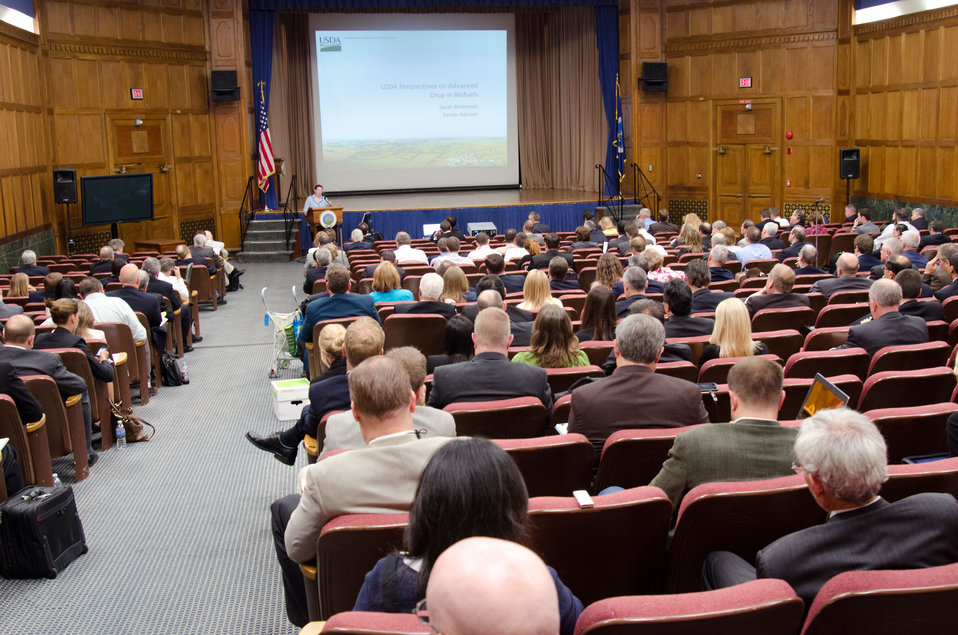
Senior Advisor to the Secretary of Agriculture Sarah Bittleman talked about the Agriculture perspectives on advanced drop-in biofuels, at the Industry Roundtable held in the Jefferson Auditorium, U.S.Department of Agriculture Headquarters in Washington, D.C., on Friday, May 18, 2012. Her talk discussed which feedstocks the USDA sees as coming advanced drop-in biofuels industry, what a transition from a food to a non-food related feedstock looks like and when/if they are required, and a detailed overview of the Commodity Credit Corporation (CCC) programs.